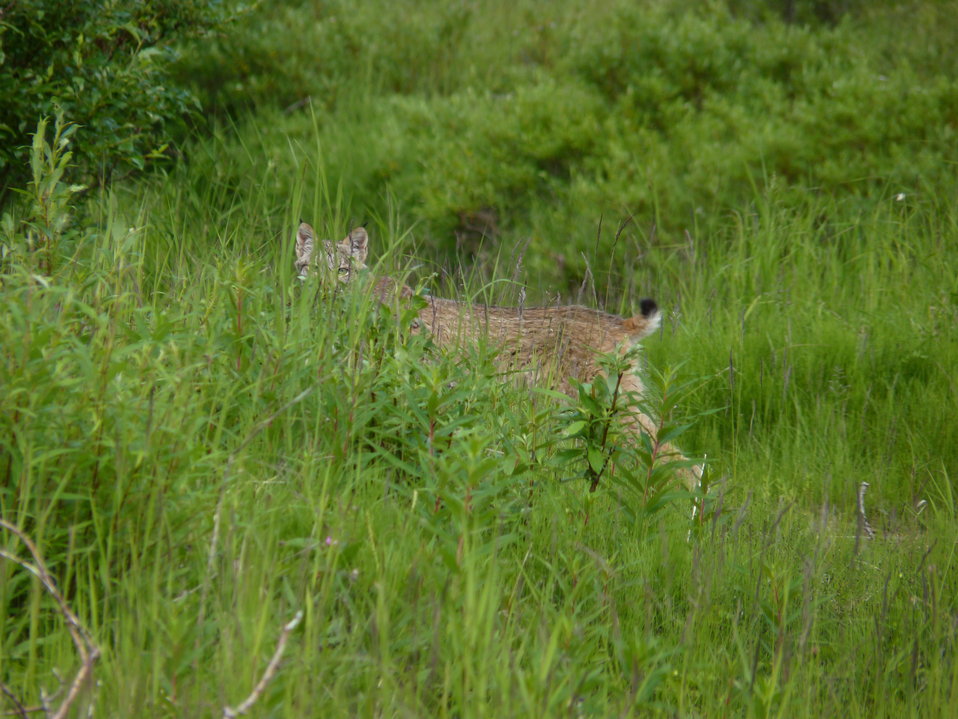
Elusive Lynx

Andreafsky Wilderness, Yukon Delta National Wildlife Refuge